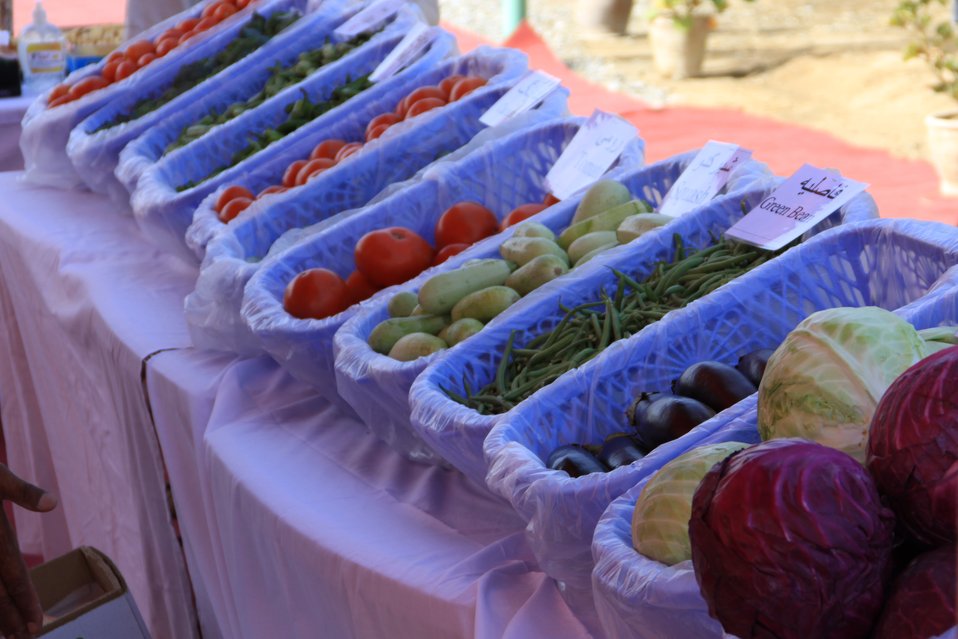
Badam Bagh Farm